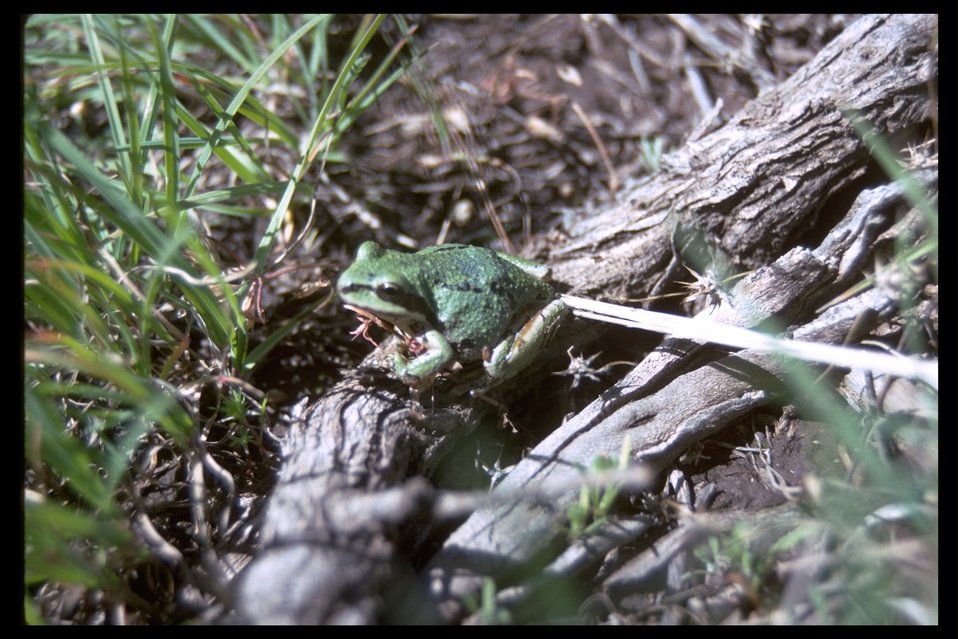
Small green frog along a riparian area in Stonehouse WSA. (WSA 2-23L)